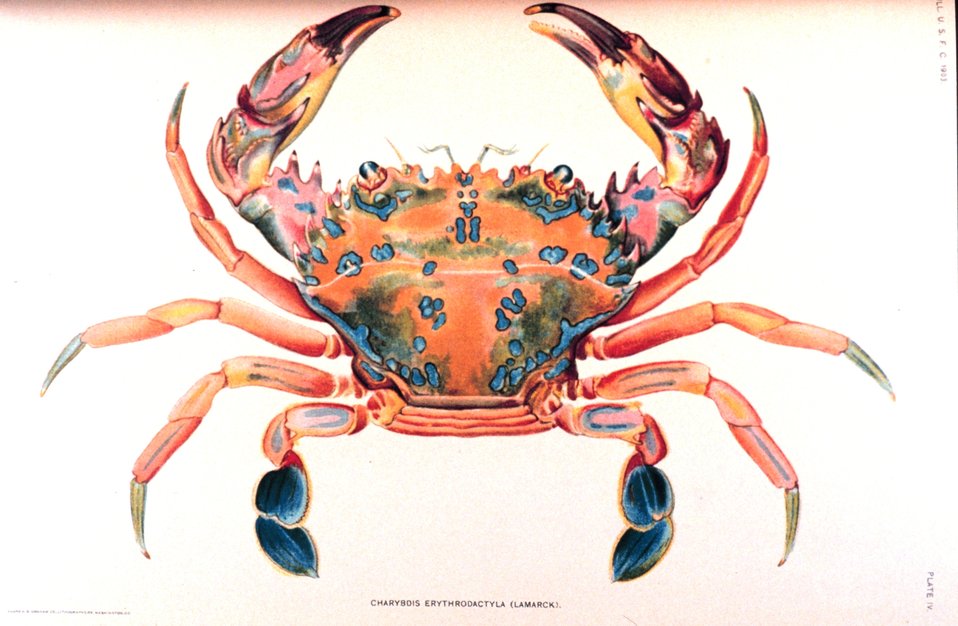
Charybdis Erthodactyla (Lamarck). In: 'The Brachyura and Macrura of the Hawaiian Islands' by Mary J. Rathbun. Bulletin of the United States Fish Commission, Vol. XXIII, for 1903. Part III. P. 930. Plate IV.